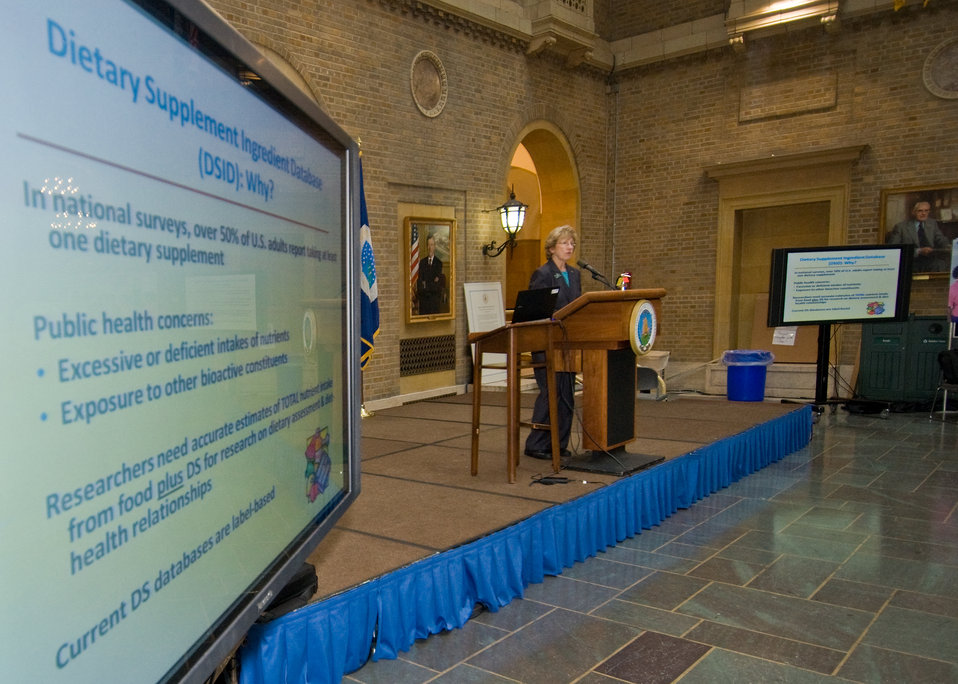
Joanne Holden, Research Leader, Nutrient data Laboratory, Beltsville Human Nutrition Research Center located in Beltsville, Maryland spoke about, “Multi-Vitamin Supplements: Are Those Nutrients Really There?” at the, Celebrating Science Bed Bugs...Chocolate...and Beyond' event held at the United States Department of Agriculture in Washington, DC, on Monday, October 4, 2010. The Human Nutrition Research Center set up the nutrient data you find on food packaging. USDA Photo 10di1515-71 by Bob Nichols.